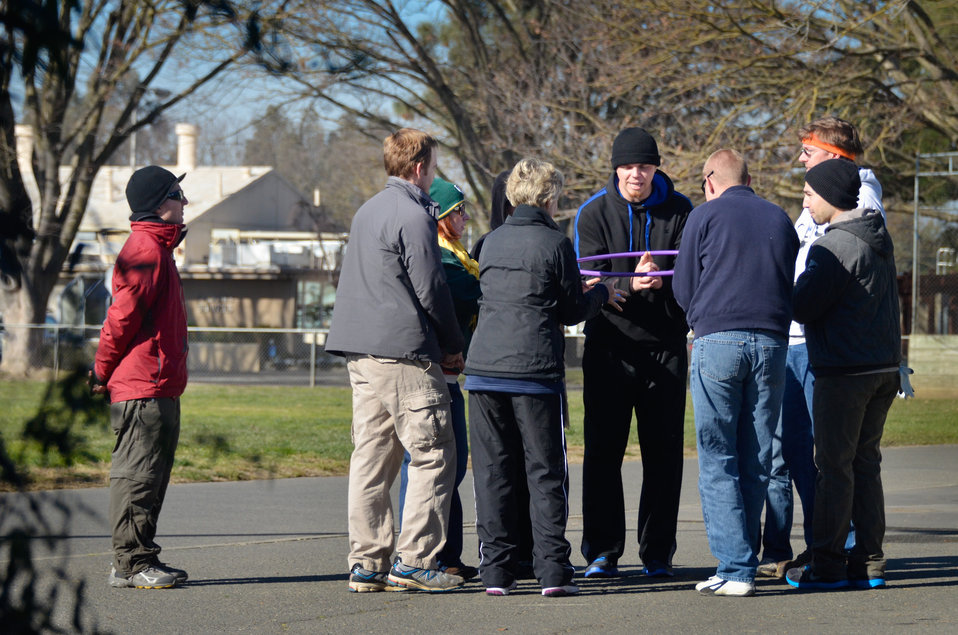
LDP level I ropes course activities

U.S. Army Corps of Engineers Sacramento District employees participate in ropes course activities at California State University-Sacramento, Jan. 16, 2013, as part of the district’s leadership development program.
The program is designed to introduce participants to the Army’s expertise in developing skilled, tested and character-based leaders at all levels and across all functional levels.